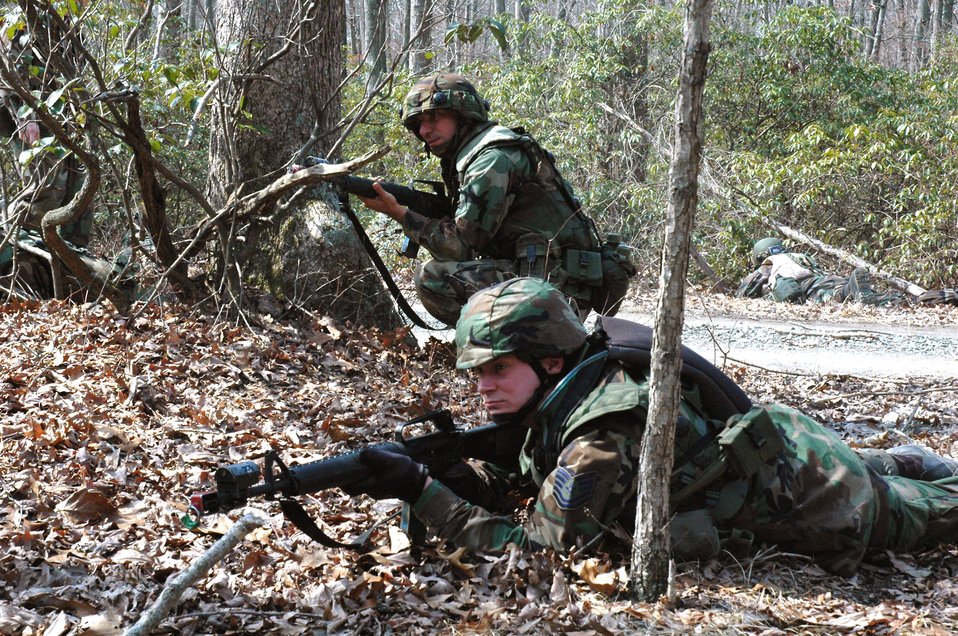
Advanced Contingency Skills Training

Airmen practice squad and fire team manuevers as part of a tactics and patrolling class for the Advanced Contingency Skills Training Course March 14 on a range on Fort Dix, N.J. The course, made up of more than 300 students, prepares Airmen for upcoming deployments through teaching areas such as deployment tactics, patrolling, convoy operations and self defense. The course is taught by the U.S. Air Force Expeditionary Center's 421st Combat Training Squadron.